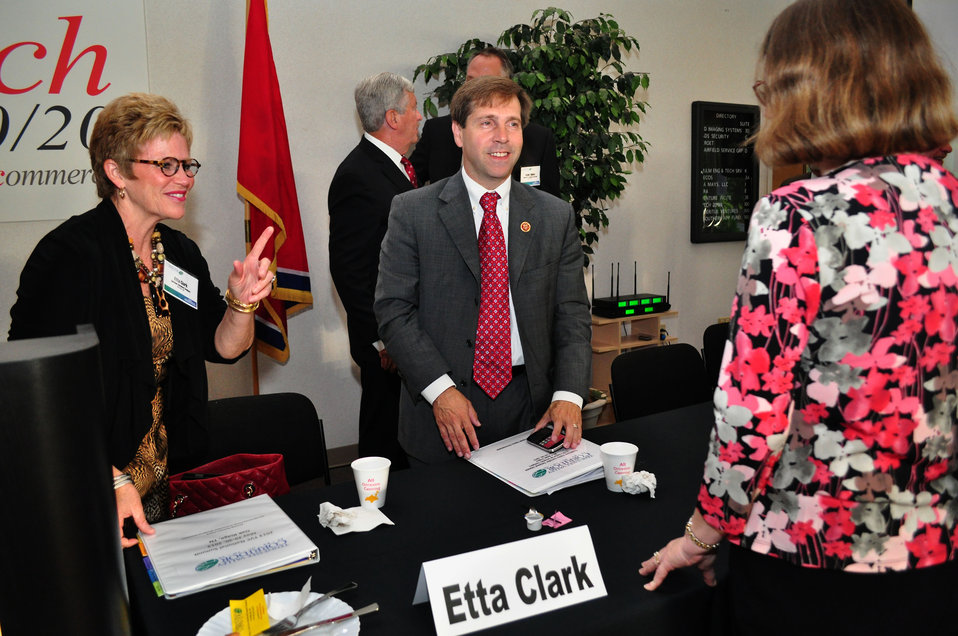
Tennessee Valley Corridor Summit Oak Ridge

13-062 DOE photo Lynn Freeny 5-29-2013 Oak Ridge Tennessee